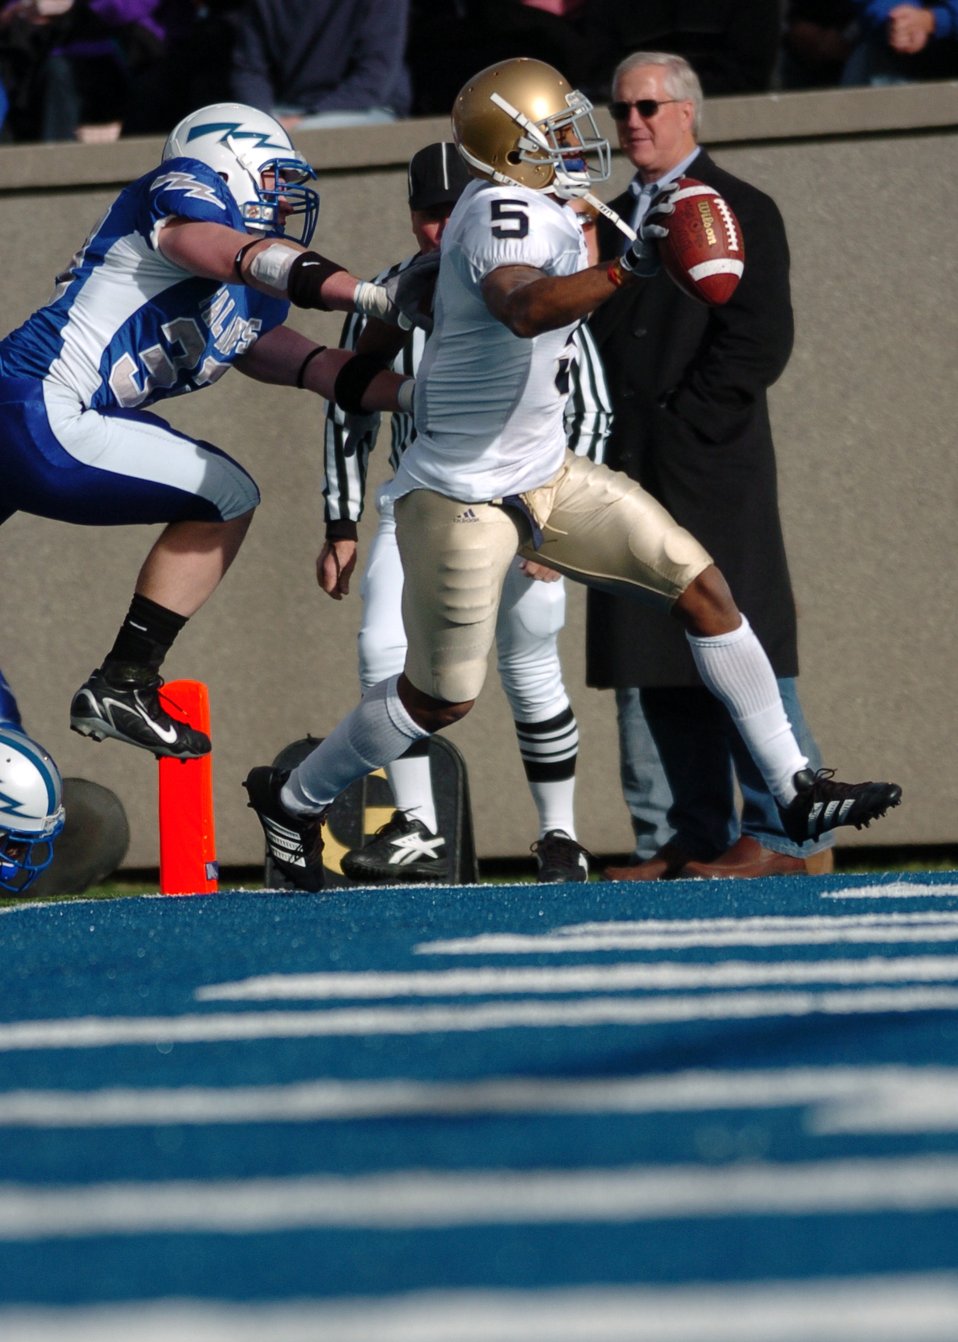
Irish Score

Notre Dame wide receiver Rhema McKnight gets around Air Force linebacker Drew Fowler for a first-quarter touchdown. Irish quarterback Brady Quinn threw for 207 yards and four touchdowns on the day. Eigth-ranked Notre Dame won, 39-17.